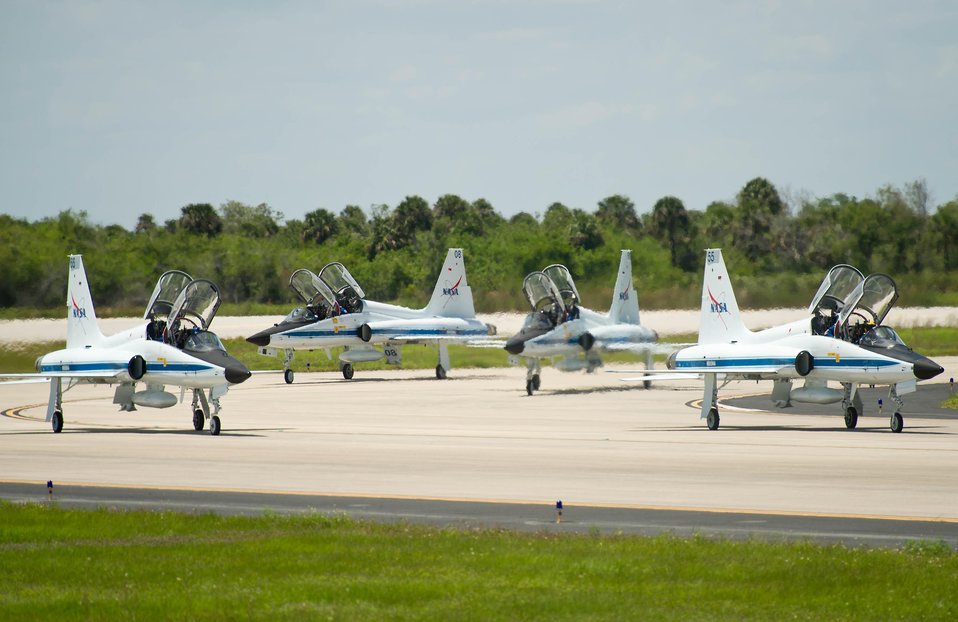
Space Shuttle Endeavor crew arrives at Kennedy Space Center

The STS-134 crew arrived in T-38 jets April 26, 2011, at the NASA Kennedy Space Center Shuttle Landing Facility in Cape Canaveral, Fla. The Space Shuttle Endeavour will be piloted by retired Col. Gregory Johnson, a 1984 Air Force Academy graduate. Launch for the 14-day mission is scheduled for April 29 at 3:47 p.m. EDT.